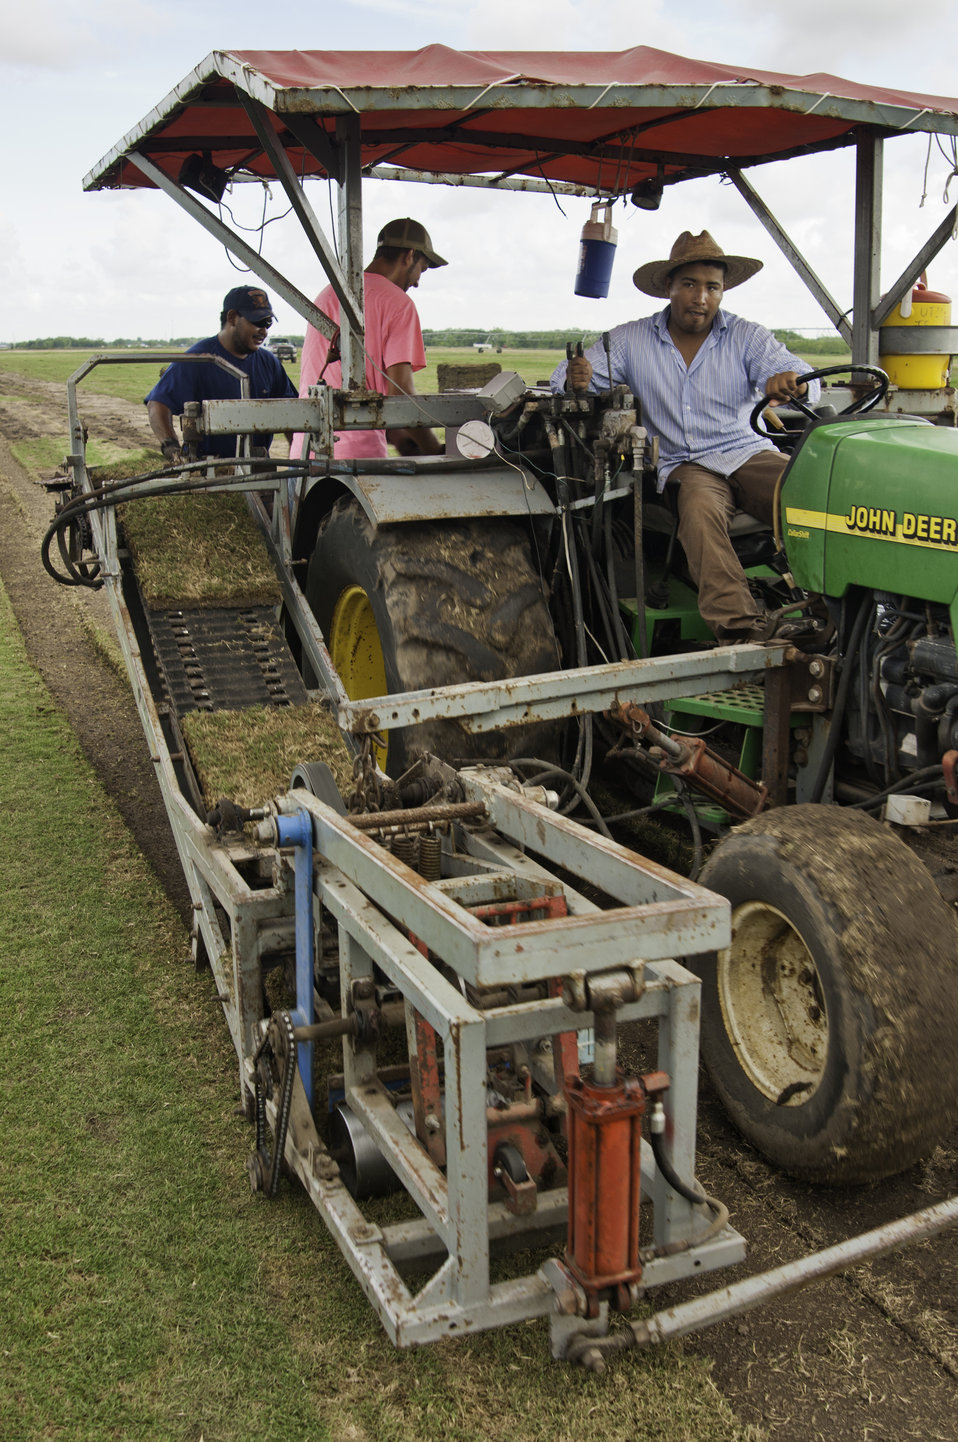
Sod used in landscaping is harvested on the Quality Turf Farms in Guy, TX on Aug. 23, 2013.